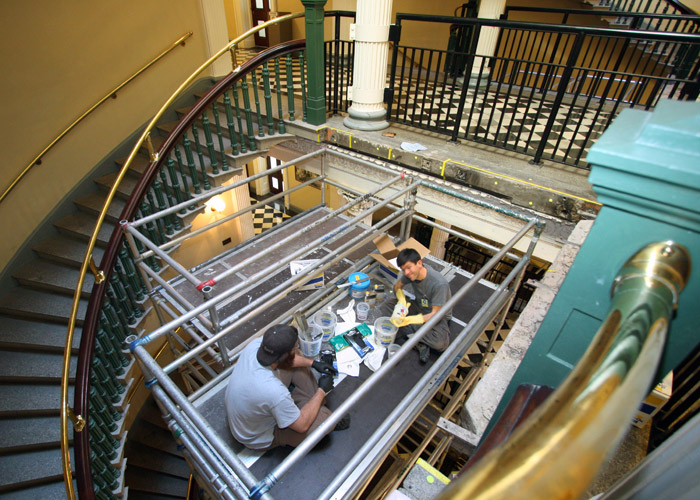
Historic Restoration of the Treasury Stairwells

Scaffolding in the West Wing stairwell served as a working platform for taking measurements, mold making and laser 3D scanning of intricate details.